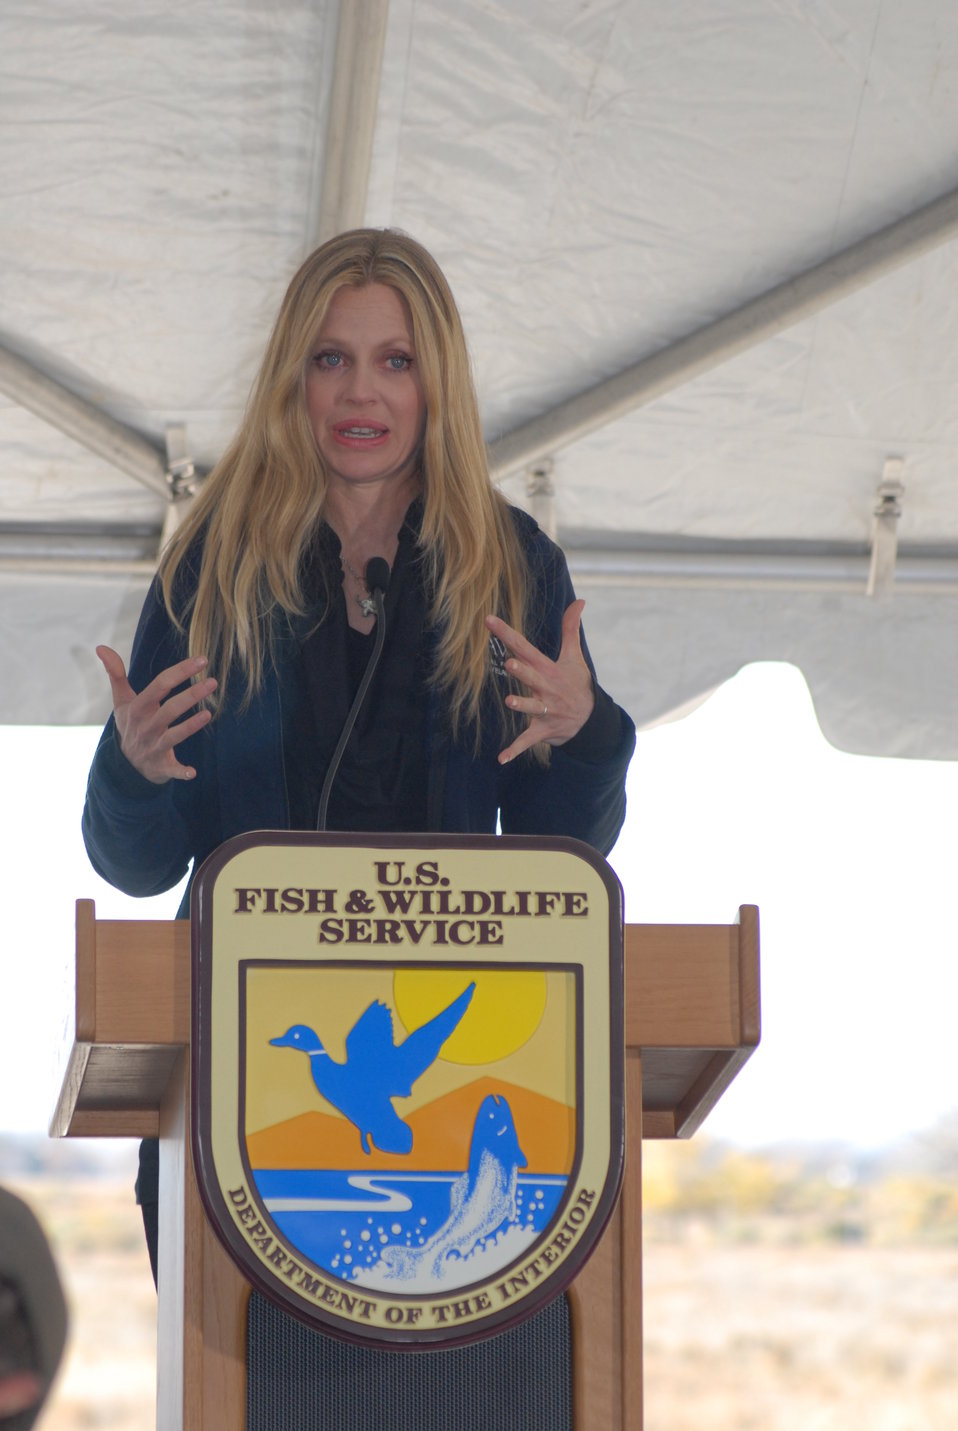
Kristin Bauer, actress and IFAW Ambassador, speaks at the U.S. Ivory Crush.